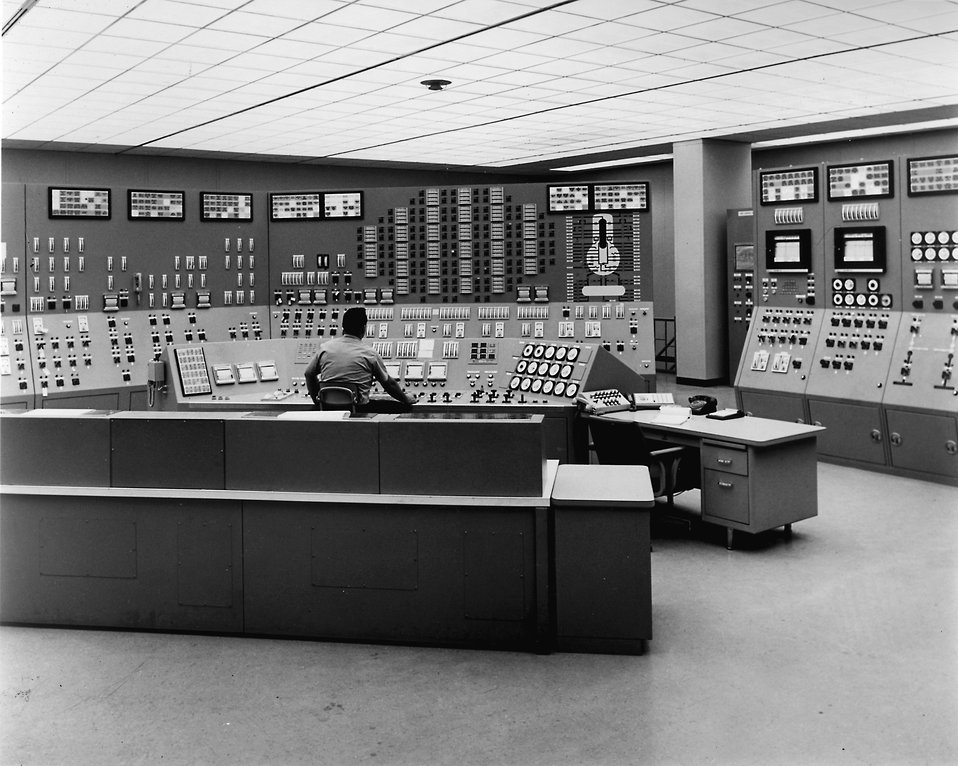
Control room at the Niagara Mohawk Power Corporation's 500,000-kilowatt nuclear station, is the nerve center for the entire power plant. Circa 1970.